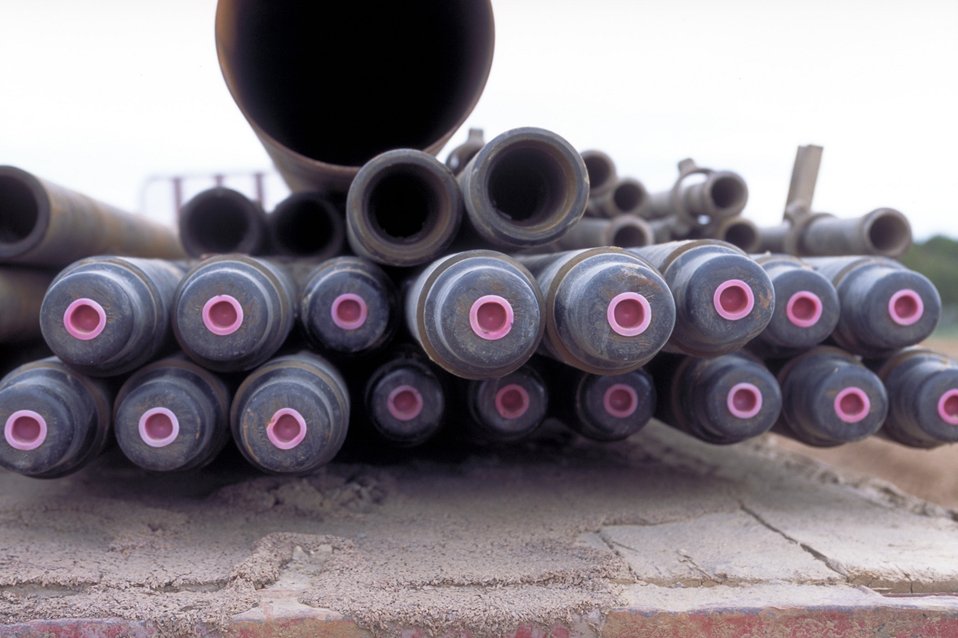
Drilling for coal bed methane near Price, Utah.